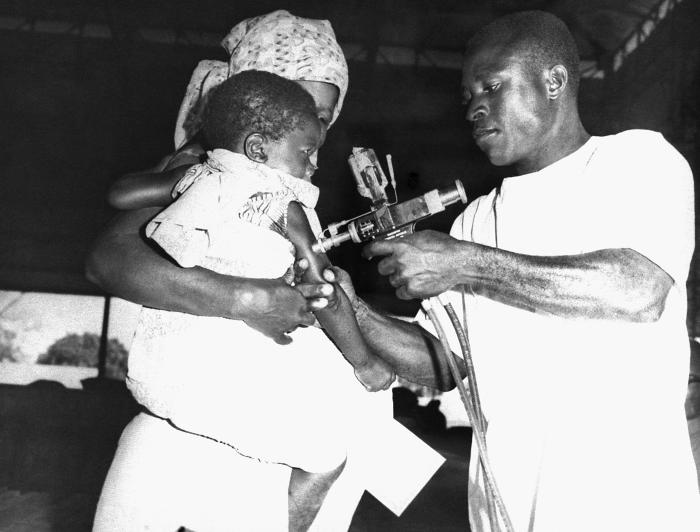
This 1967 photograph depicted a Togolese woman having her child vaccinated against smallpox. It was taken just prior to the kick-off of the Global Smallpox Eradication Program.